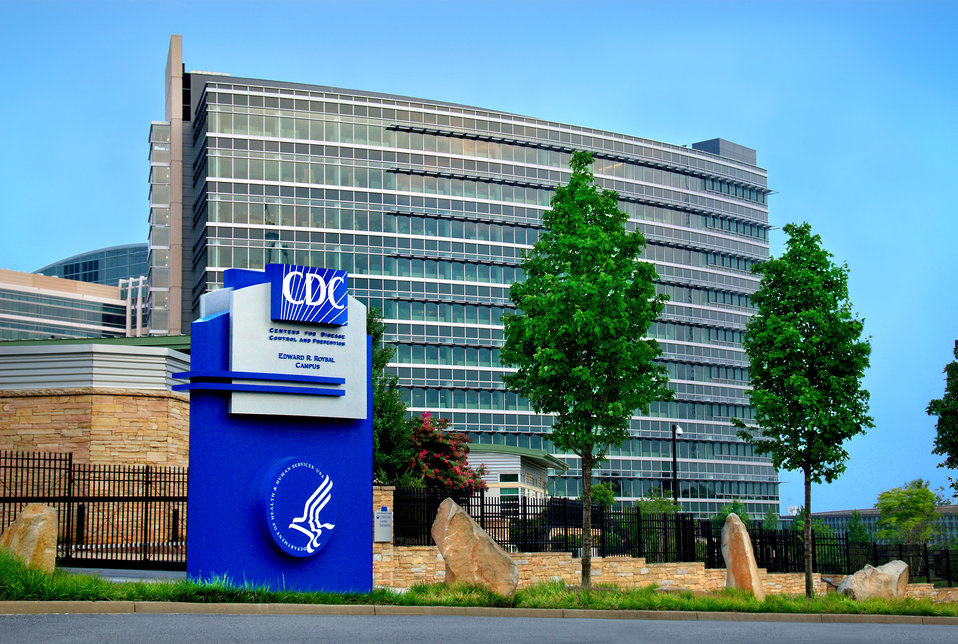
This photograph depicted an exterior view of Building 21, located at the Centers for Disease Control and Prevention, CDC, headquarters, also referred to as the Roybal Campus. Situated in Atlanta, Georgia, this view was from the campus' entrance.